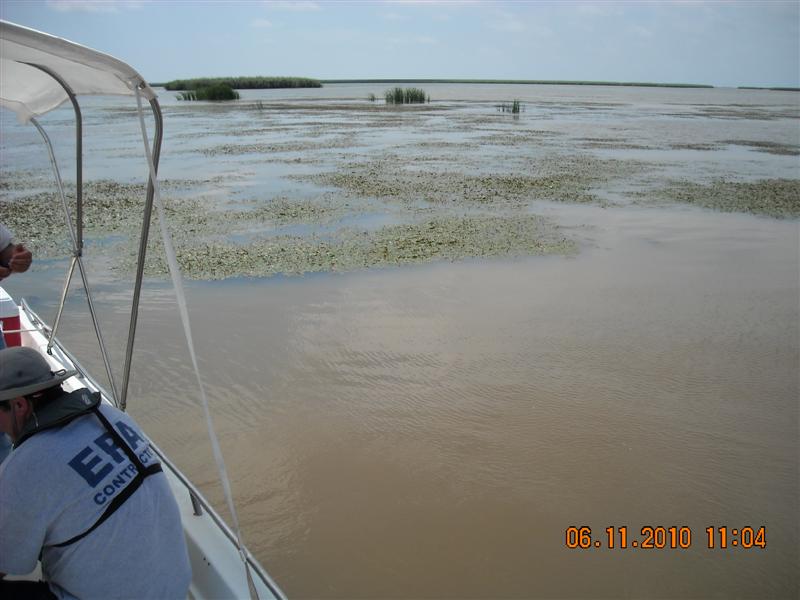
Sample location

Sampling location along the Gulf coast